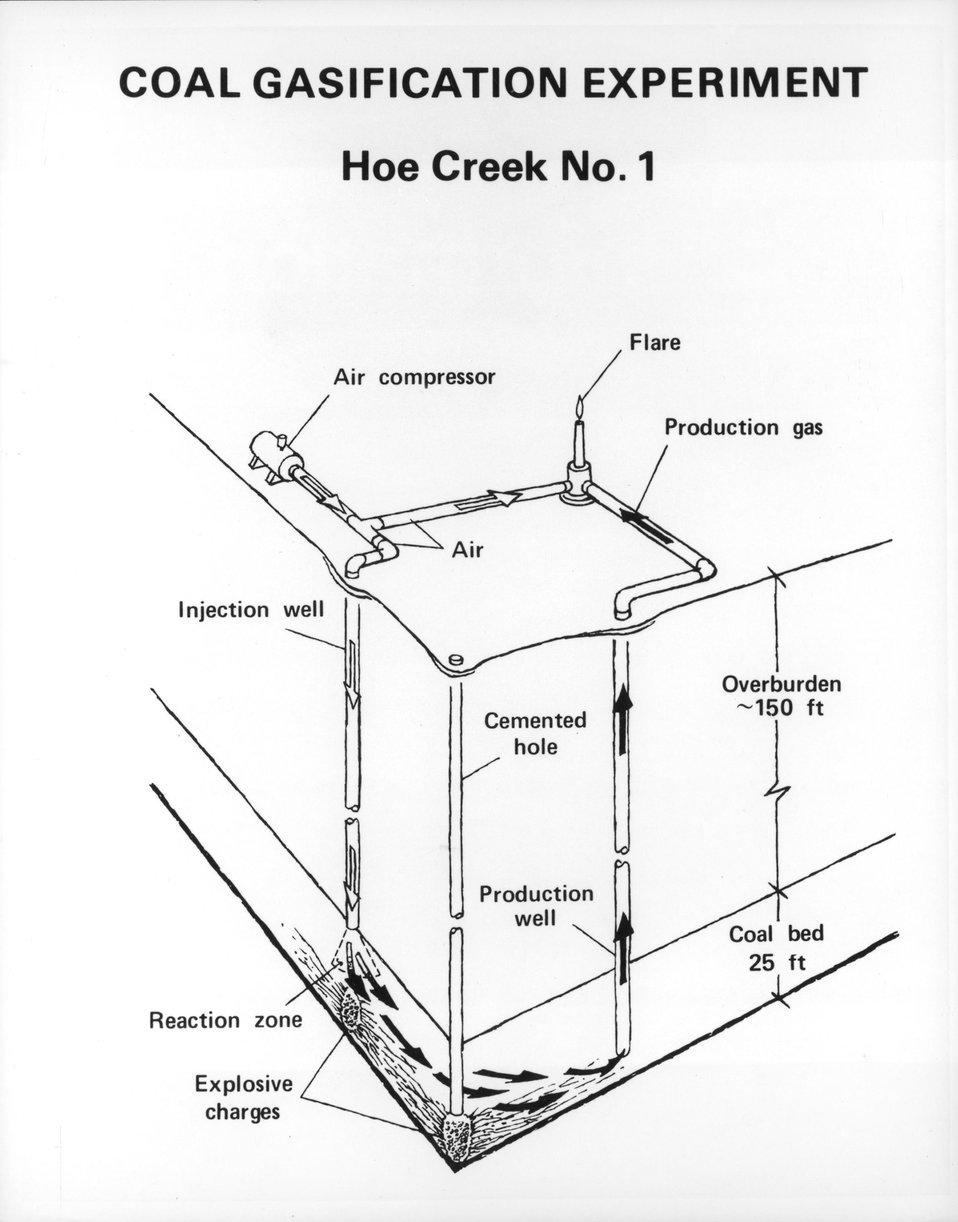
Drawing shows the main features of an underground coal gasification experiment planned for late November (1975) near Hoe Creek 20 miles south of Gillette, Wyoming, as part of thee national program of the U.S. Department of Energy. C. 1975